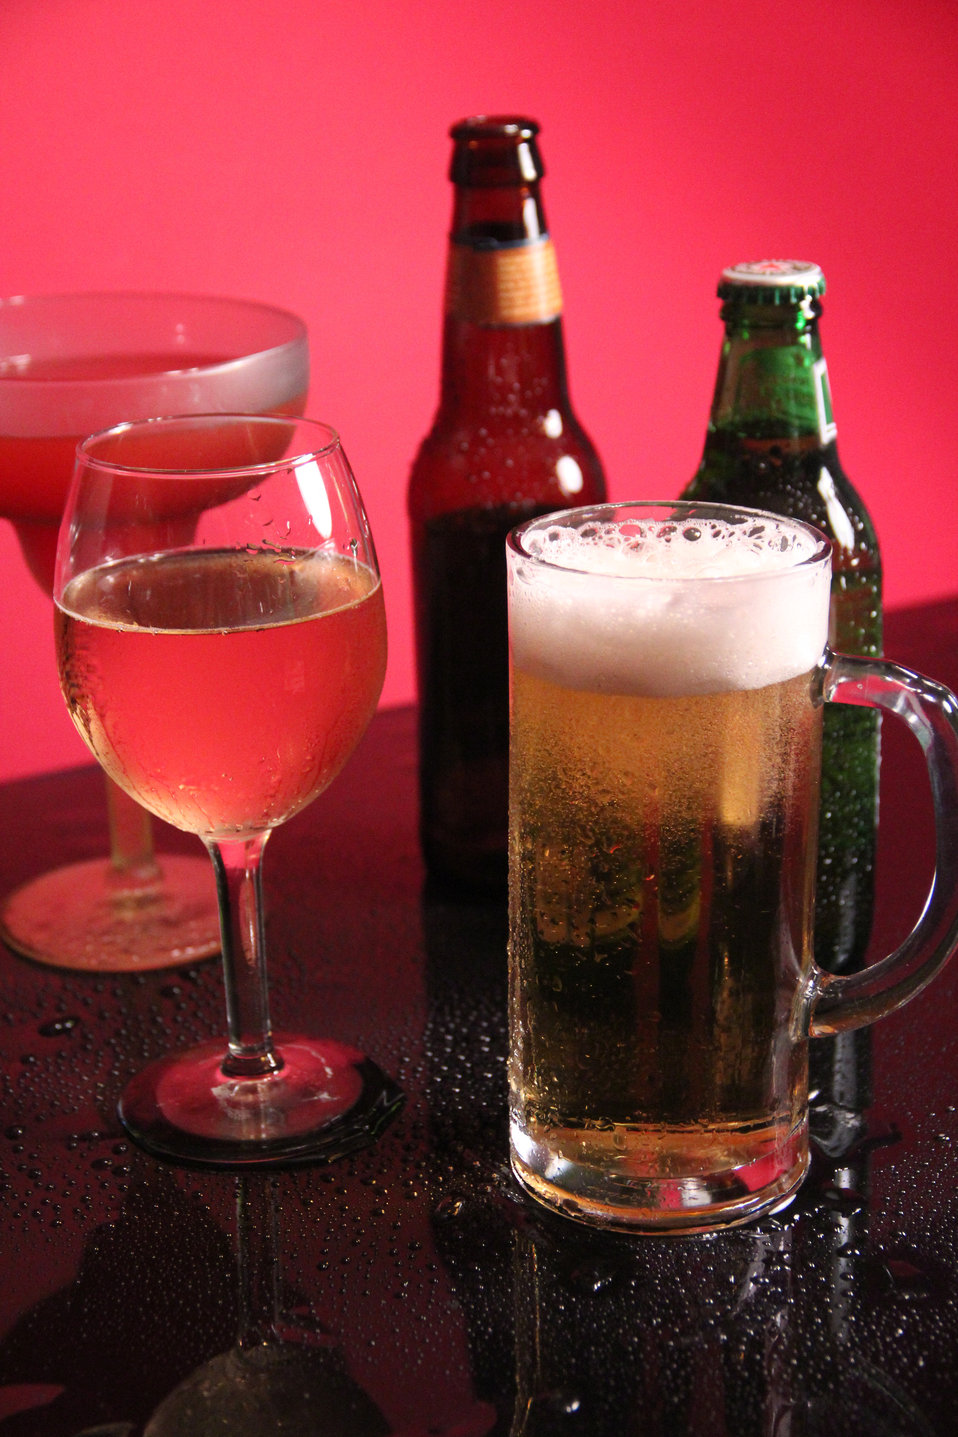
This image depicts a mixed drink and beer still life, which included one unopened, and one opened bottle of beer, a mug of freshly poured beer, a half-filled wine glass containing a white wine, and in the background, a margarita in its customary glass.